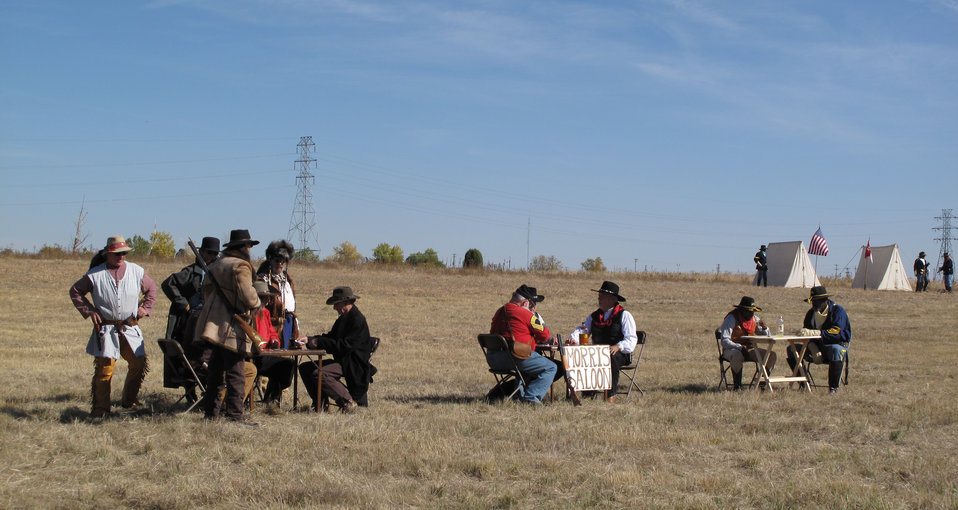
Refuge Round-up 2010

Saloon reenactment at the Refuge Round-up at the Rocky Mountain Arsenal in Colorado.